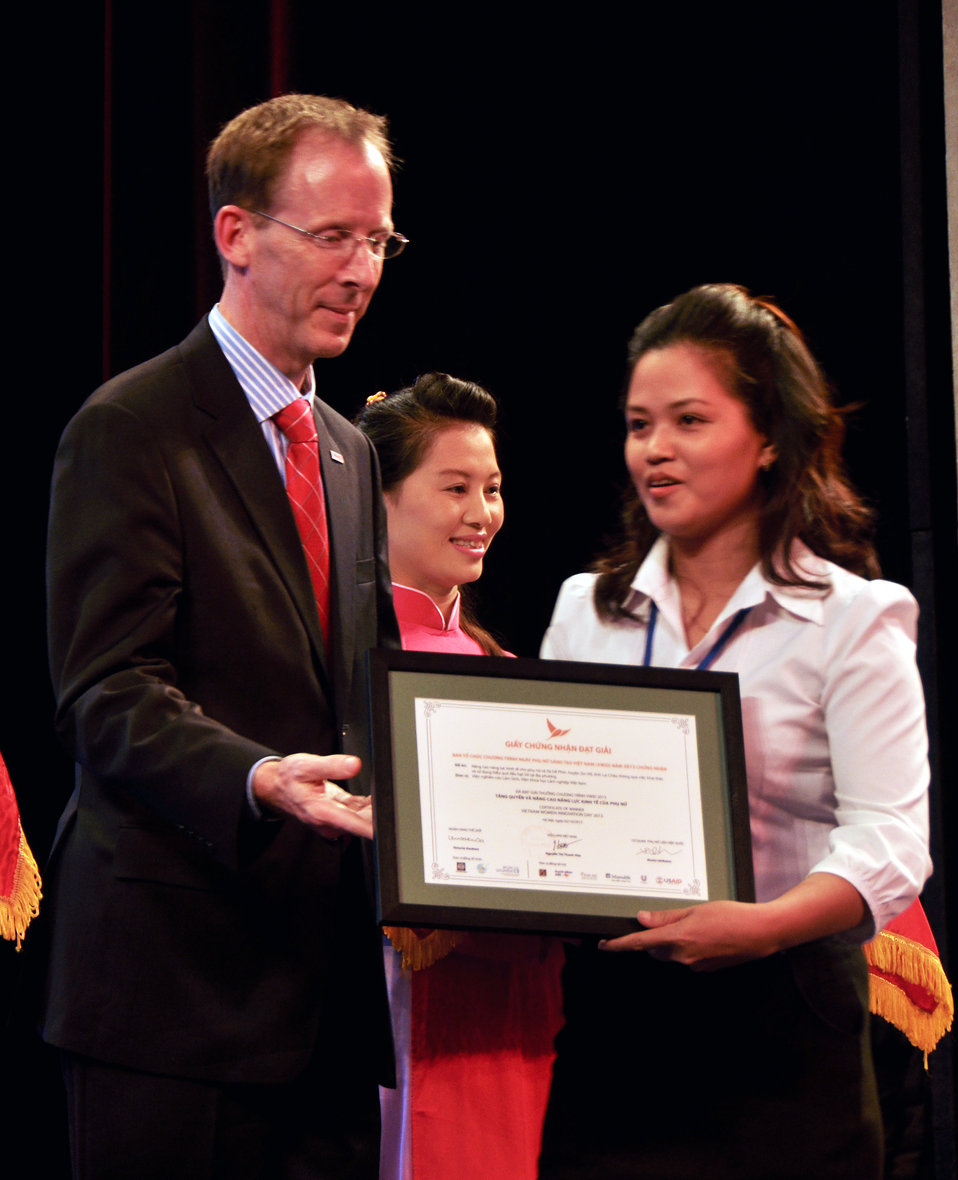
Vietnam Women Innovation Day 2013

USAID Mission Director Joakim Parker awards prizes to winning innovative proposals.

Hanoi, October 2, 2013.